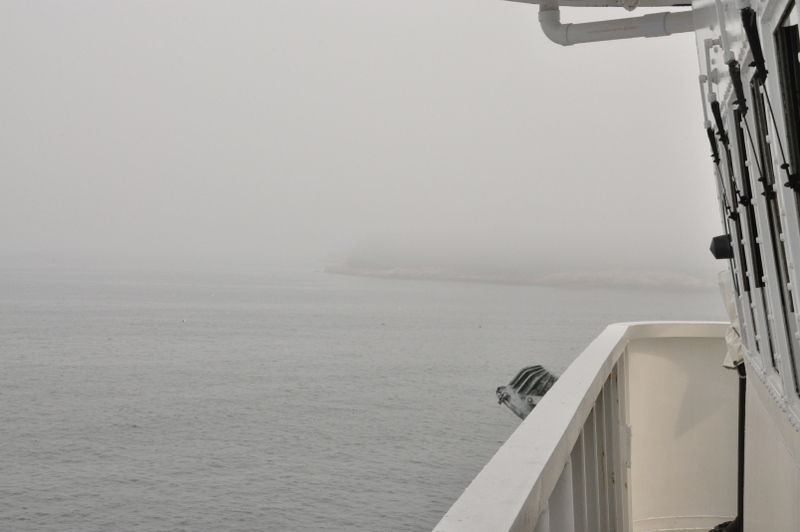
August 2009, So much for seeing the northern coast of Maine.

While we didn't get to take in the beauty of Maine's northern coastline, we did see thouosands of lobster bouys as the ship's crew carefully navigated past Saddleback Island, Vinalhaven and many more. They also blasted the horn a few times, (deafening I can tell you from personal experience being in the wrong place at the wrong time) but it also prevented us from surprising smaller boats on the other side of the fog.